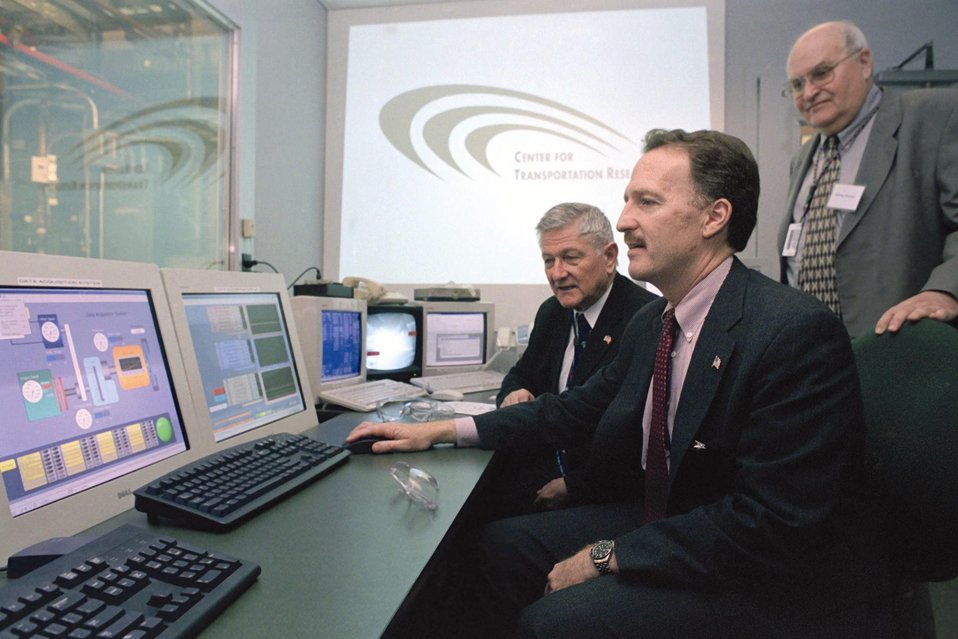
ASSISTANT SECRETARY FOR ENERGY EFFICIENCY, DAVID GARMAN AT ARGONNE'S ADVANCED POWERTRAIN RESEARCH FACILITY.

ASSISTANT SECRETARY GARMAN IS PICTURED RUNNING AN ENERGY ECONOMY EMISSIONS TEST ON A HYBRID-ELECTRIC CAR'S POWERTRAIN. WITH HIM ARE ANL DIRECTOR, HERMANN GRUNDER (SEATED) AND ASSOCIATE DIRECTOR HARVEY DRUCKER. ANL'S POWERTRAIN FACILITY IS NORTH AMERICA'S ONLY INDEPENDENT TESTING FACILITY FOR ENGINES, FUEL CELLS, ELECTRIC DRIVES AND ENERGY STORAGE. THE FACILITY FEATURES PERFORMANCE AND EMISSIONS MEASUREMENT EQUIPMENT FOR DEVELOPING ADVANCED ENGINE AND TRANSMISSION TECHNOLOGY FOR CARS AND TRUCKS.